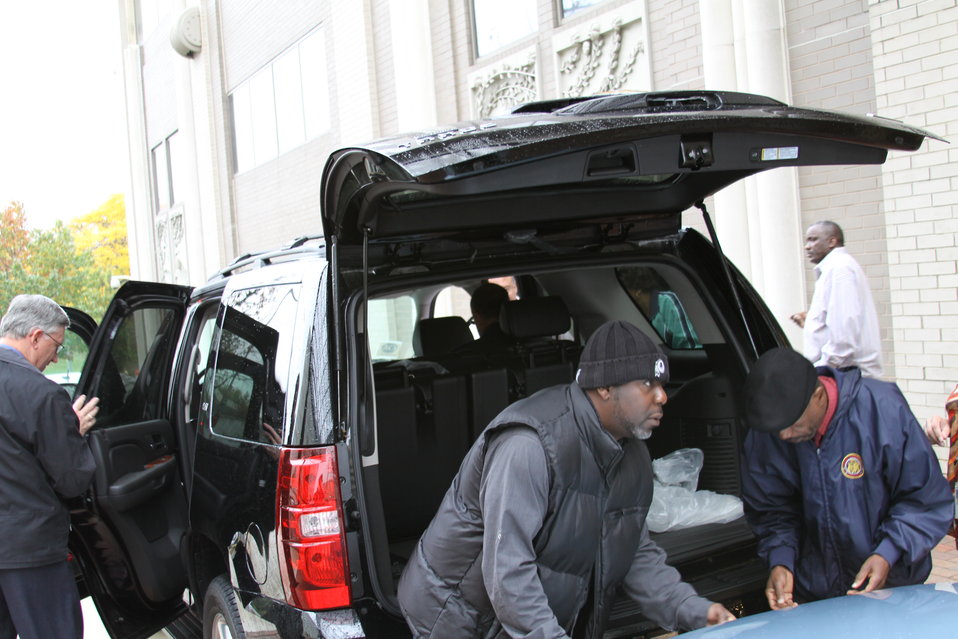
FCC Official Vehicle Tour